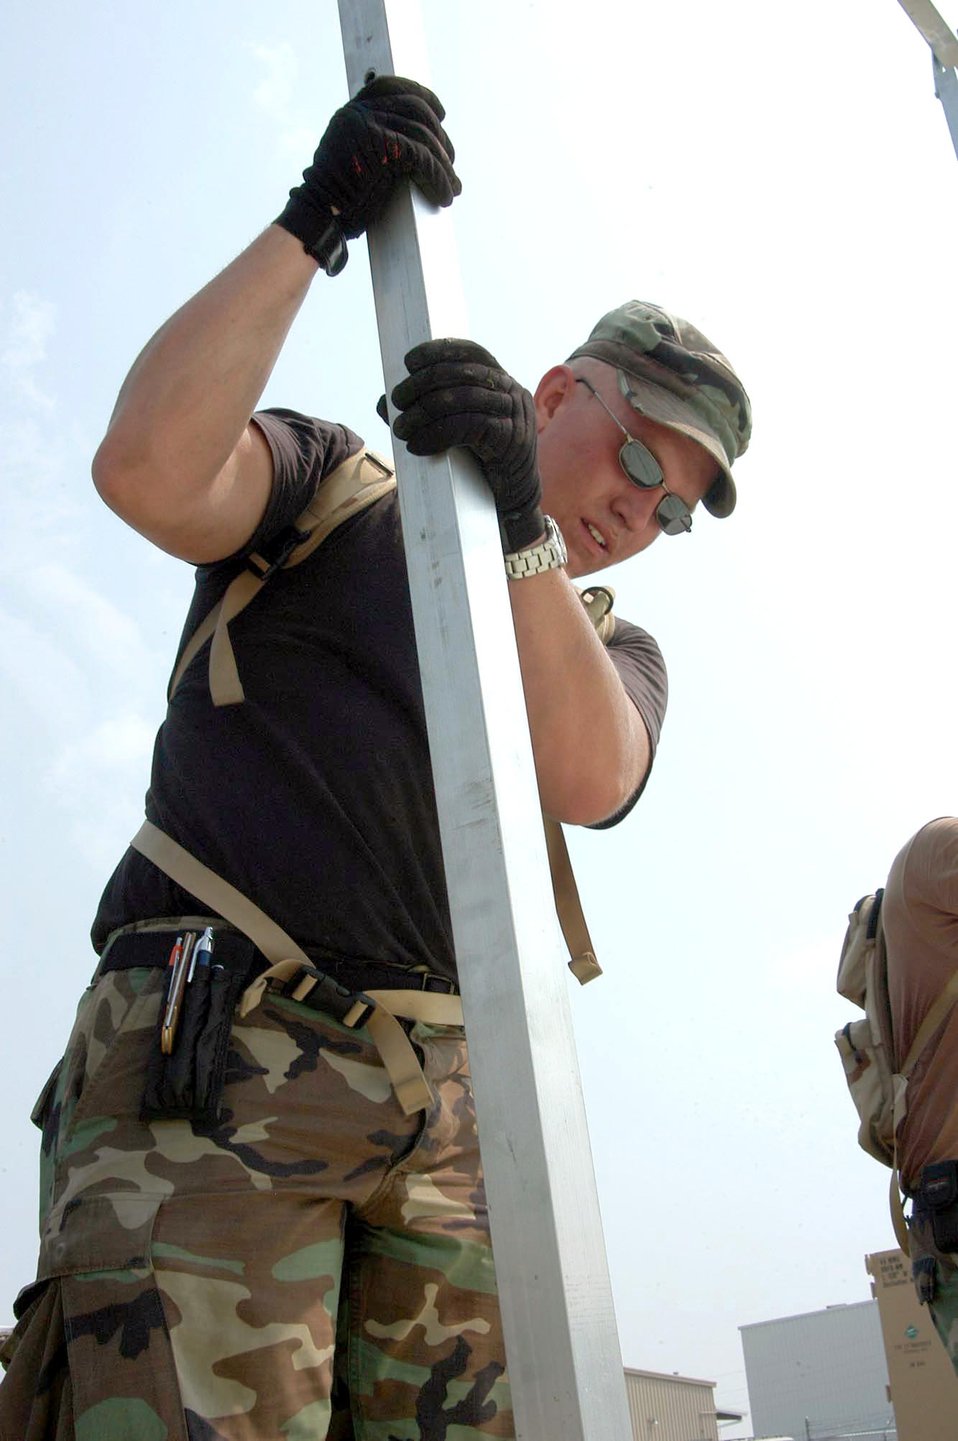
Hurricane relief

LOUIS ARMSTRONG NEW ORLEANS INTERNATIONAL AIRPORT, La. -- Senior Airman Brandon Mathis helps put up an Alaskan shelter here Sept. 5. More than 30 shelters have been built up to support additional Airmen arriving here to support the Hurricane Katrina relief and rebuilding efforts in New Orleans. Airman Mathis is a structures technician from the 20th Civil Engineer Squadron at Shaw Air Force Base, S.C.